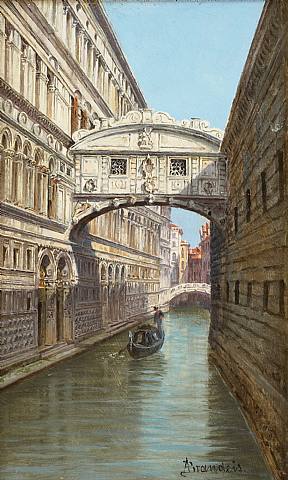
Artwork images 119688 294795 antonietta-brandeis